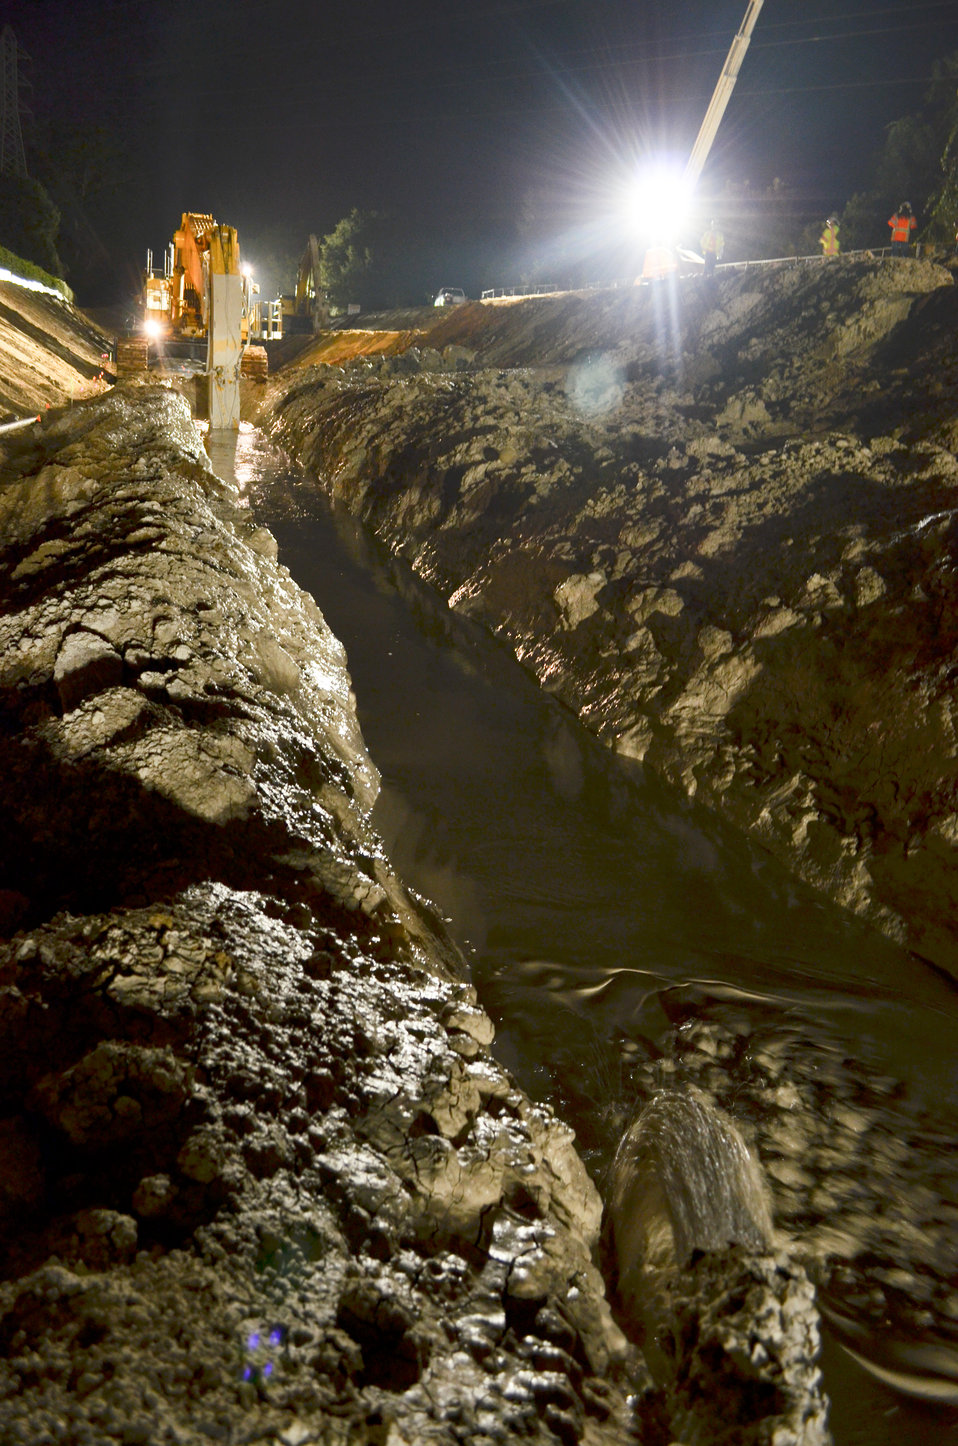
Seepage cutoff wall nighttime construction along the American River

Construction crews work in darkness--when energy demand is lowest--on a stretch of American River levee near the California State University-Sacramento campus Sept. 12, 2012 to close a 900-foot-long gap in a seepage cutoff wall underneath high power lines.
The Corps has built more than 20 miles of seepage walls into American River levees since 2000. Areas where construction was complicated by utilities, bridges or power lines were set aside for later construction.
The project is part of the American River Common Features project, a joint flood risk reduction effort between the Corps, the state’s Central Valley Flood Protection Board/Department of Water Resources and the Sacramento Area Flood Control Agency.